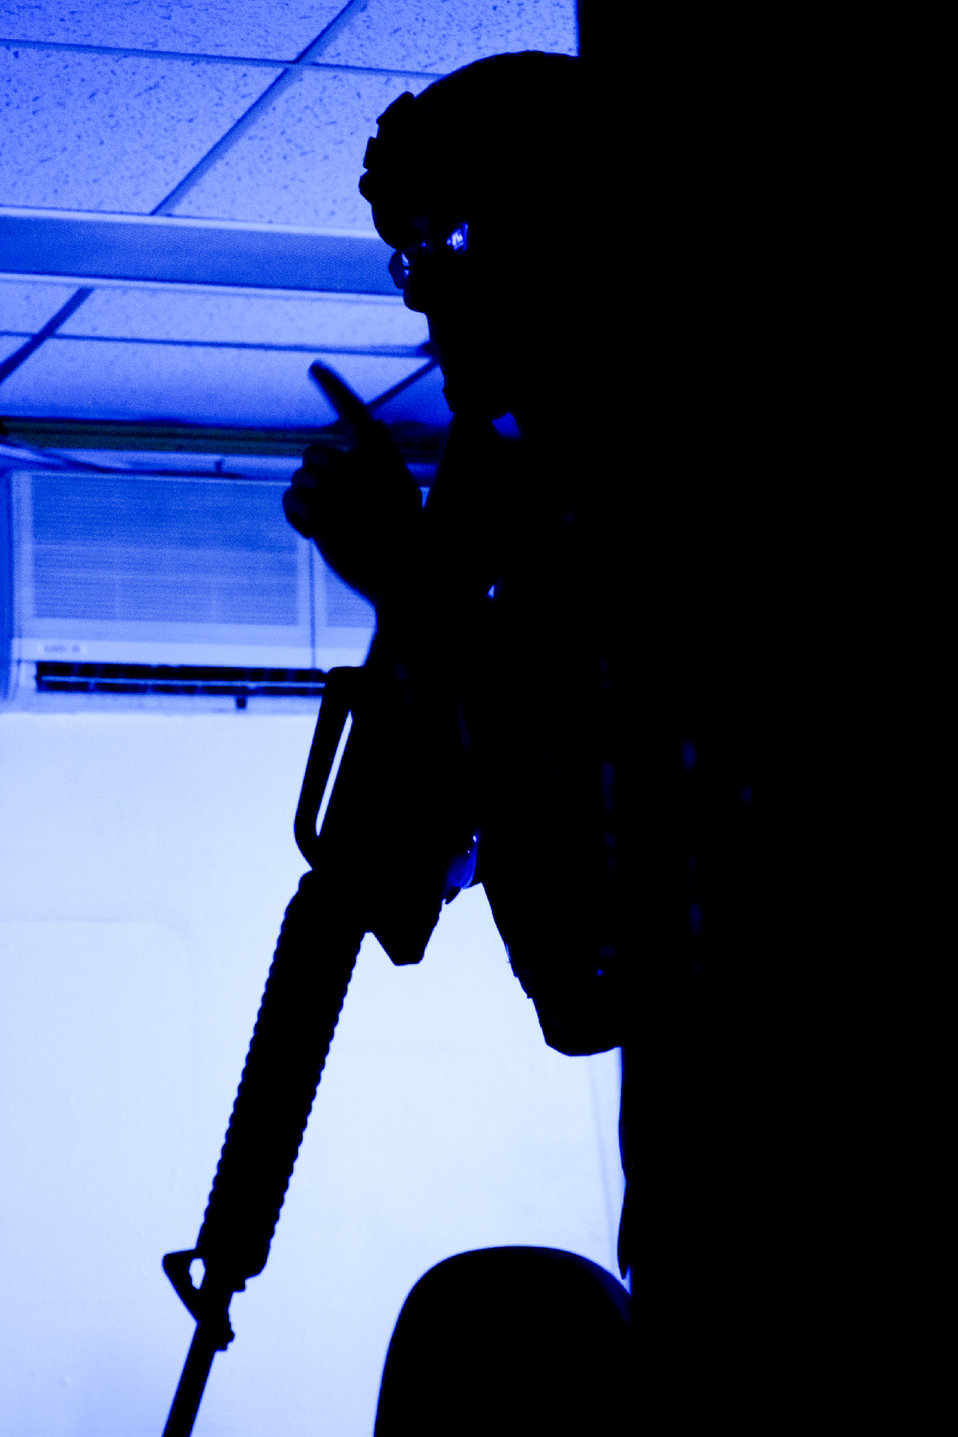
In the shadows

Staff Sgt. Rafael Quiroz, a 374th Security Forces Squadron patrolman, watches his wingman's back during an active shooter procedure at Yokota Air Base, Japan, Nov.7, 2011. Yokota is conducting an operational readiness exercise.